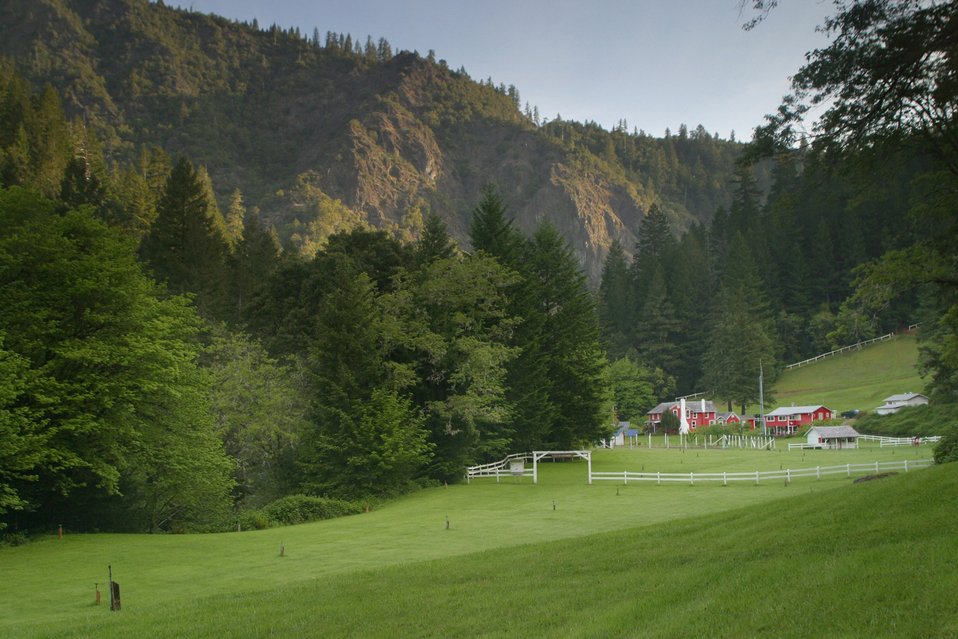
Wild section of the Rogue River from Grave Creek to Foster Bar May 19 to May 22.